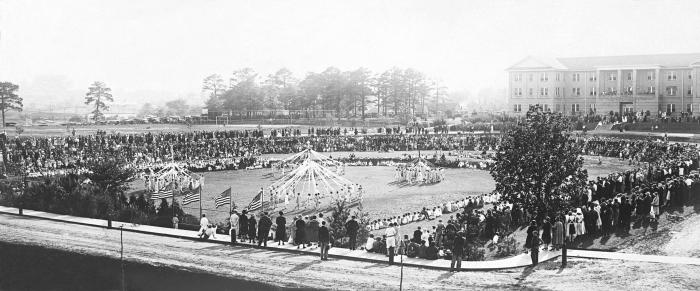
This historic photograph depicted a large gathering of adults as they were watching an assembly of children that were dancing around Maypoles on the occasion of 'Child Health Day', held in the state of Georgia. The original image was scanned from a glass lantern slide donated by the Minnesota Department of Health, and is one of a historical collection of documents and photographs devoted to observances of Child Health Day in the United States.